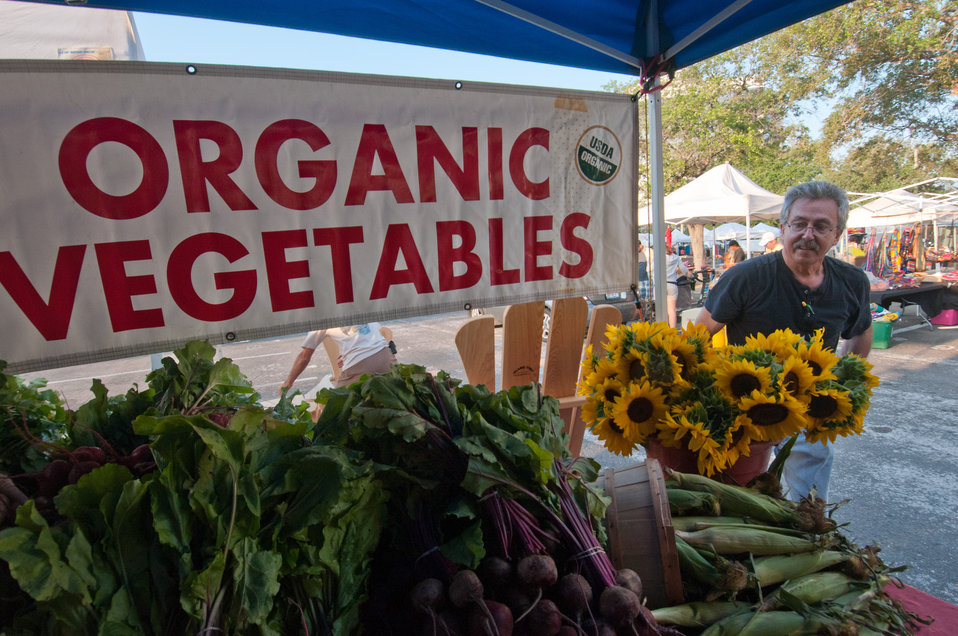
Worden Farm's (www.wordenfarm.com) Dalton Tininenko finishes display setup of fresh picked organic vegetables, ready at the Saturday Morning Market, in St. Petersburg, FL on April 14, 2012. Sunflowers are decorative and edible. Worden Farm is a family farm that provides certified organic produce to Southwest Florida through community supported agriculture (CSA) membership programs and retail sale at several farmer’s (community) markets. Chris Worden, Ph.D. and Eva Worden, Ph.D. founded and operates the farm that employs more than 20 people. Growing certified organic crops in the coastal sandy soil has required them to develop innovative farming techniques. These techniques help the farm as well as help the studies of universities and farm industry. There are several Worden Farm apprenticeships that provide hands-on training in all aspects of the farm, to include direct marketing at the Saturday Morning Market, or other market sites. The farm also holds culinary and gardening workshops, and other interactive educational events. One of their organic certifications is from the U.S. Department of Agriculture (USDA) and they have partnered with the USDA Natural Resources Conservation Service (NRCS) for soil conserving windbreaks and long tunnel structures to nurture seedlings and extend the growing season.